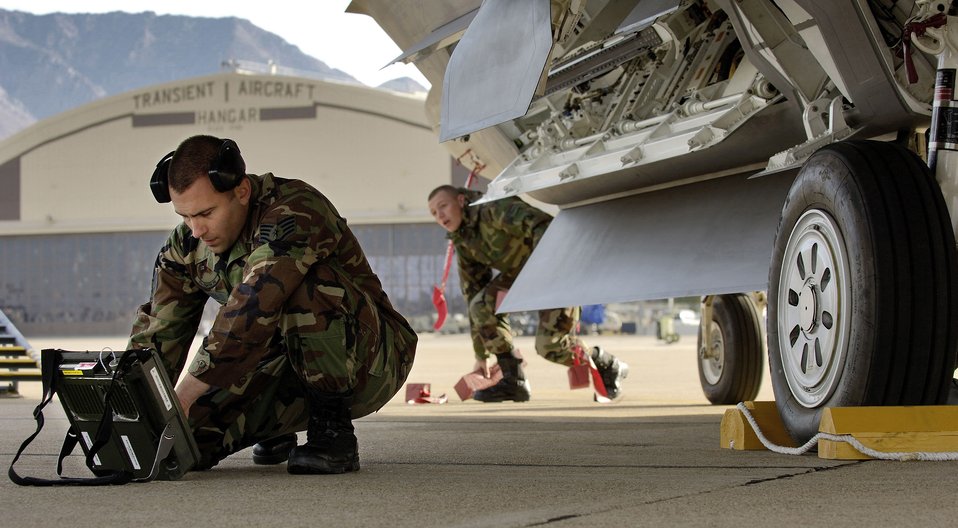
Combat Hammer

HILL AIR FORCE BASE, Utah -- Staff Sgt. Jason McDonald (left), a weapons load crew chief, checks his technical orders after loading two joint direct attack munitions onto an F/A-22 Raptor. The sergeant and the Raptors, from the 27th Fighter Squadron at Langley Air Force Base, Va., deployed here to take part in exercise Combat Hammer. The jets have a twofold goal: complete a deployment and to generate a combat-effective sortie rate away while deployed.